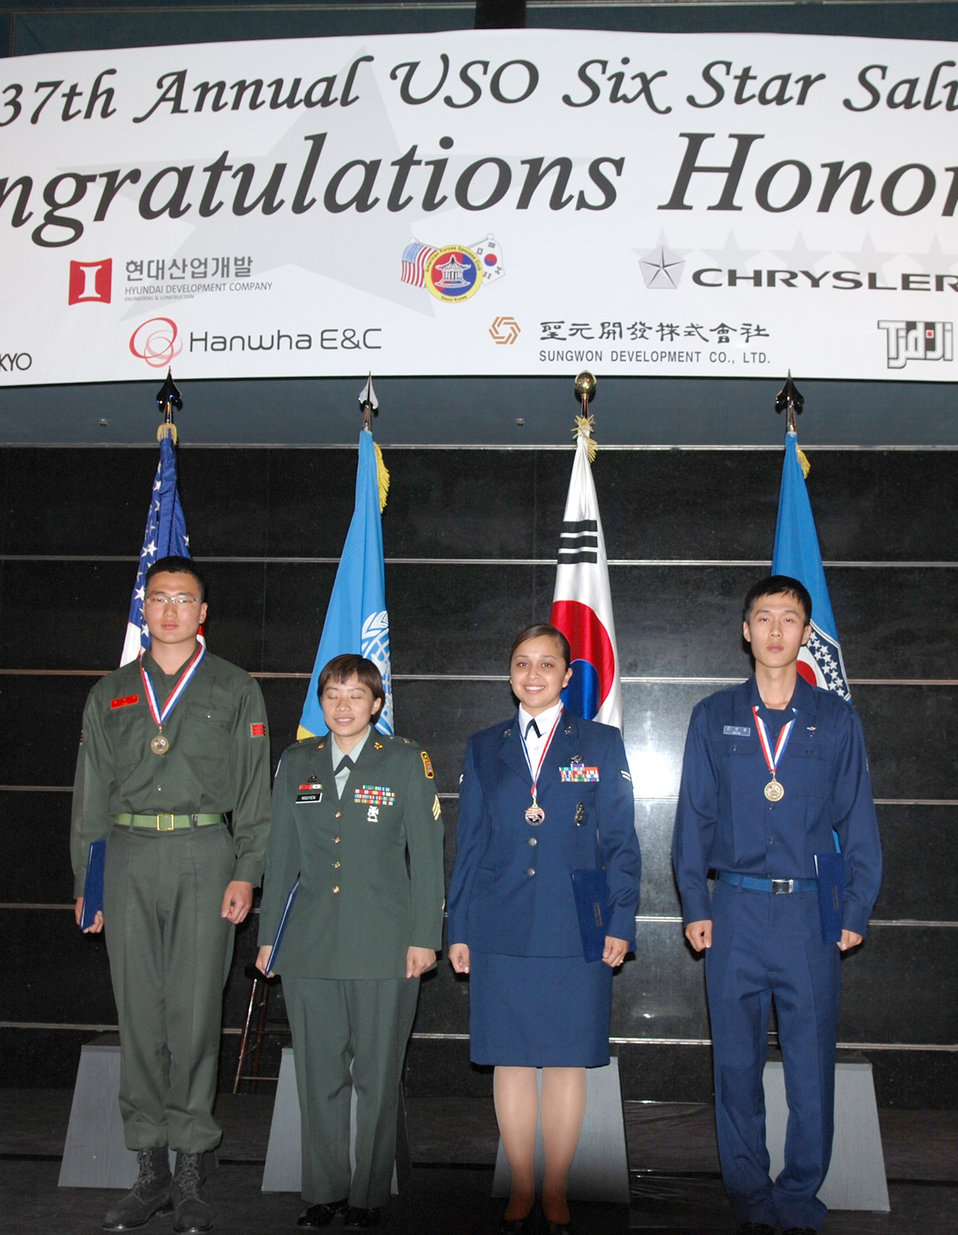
Kunsan Airman receives scholarship award

Airman 1st Class Jannette Meireles received a $2,500 scholarship while attending the United Service Organizations Six-Star-Salute banquet April 17 in Seoul, South Korea. Airman Meireles is an 8th Security Forces Squadron town patrol member at Kunsan Air Base, South Korea.